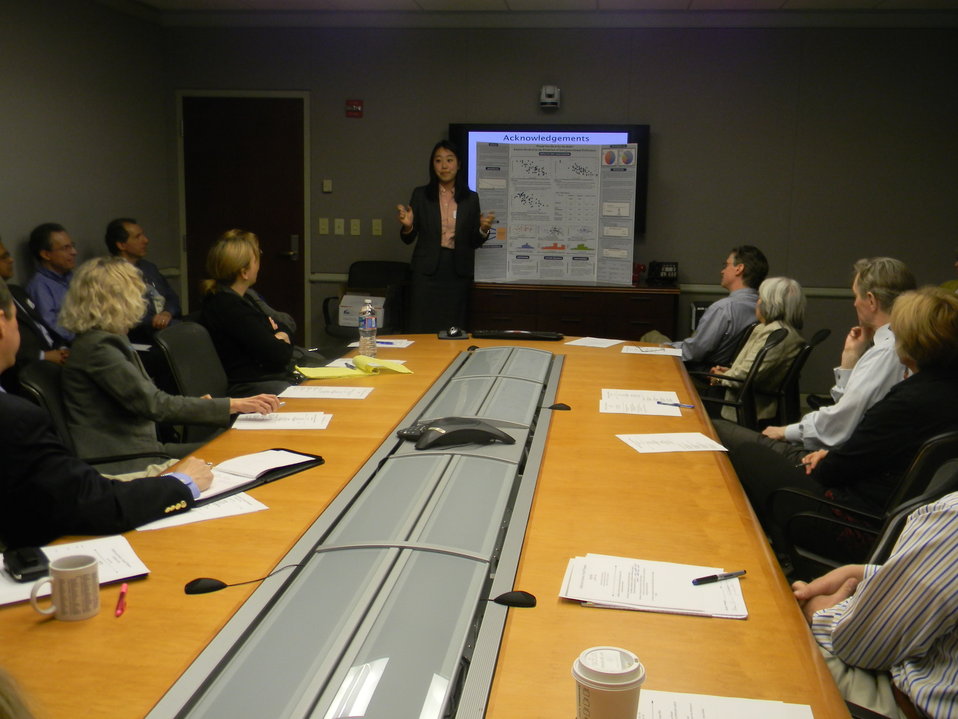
Sarah Pak presents at NIDA

Sarah Pak, 1st place winner of the 2011 Addiction Science Awards, presents her study to NIDA staff